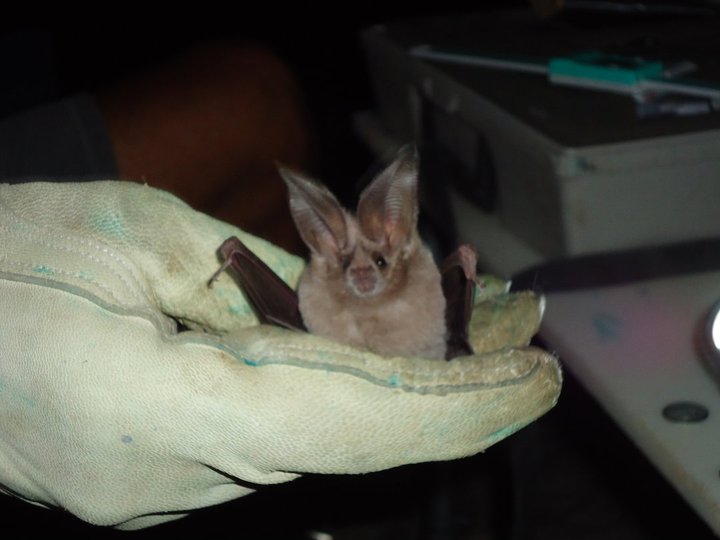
leaf-nosed bat, Kofa National Wildlife Refuge, AZ

leaf-nosed bat survey, Kofa National Wildlife Refuge, 2011
Photo: Molly McCarter, USFWS
2011 Wilderness Fellow